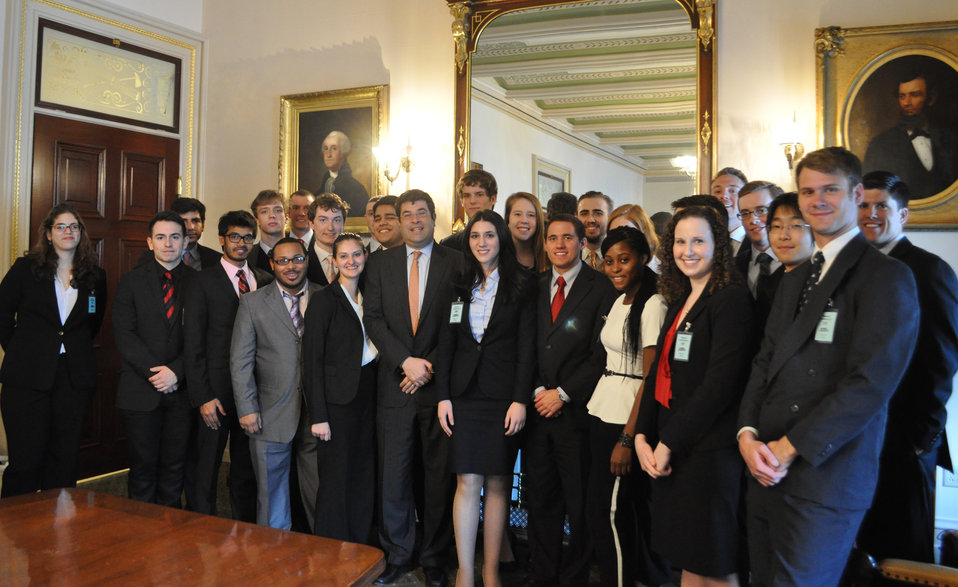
Fordham University students pose for a group photo with Deputy Secretary Neal Wolin

A group of students from Fordham University in New York visited the Treasury building and met with Deputy Secretary Neal Wolin for a candid discussion about the Department’s wide-ranging work on March 27, 2013.